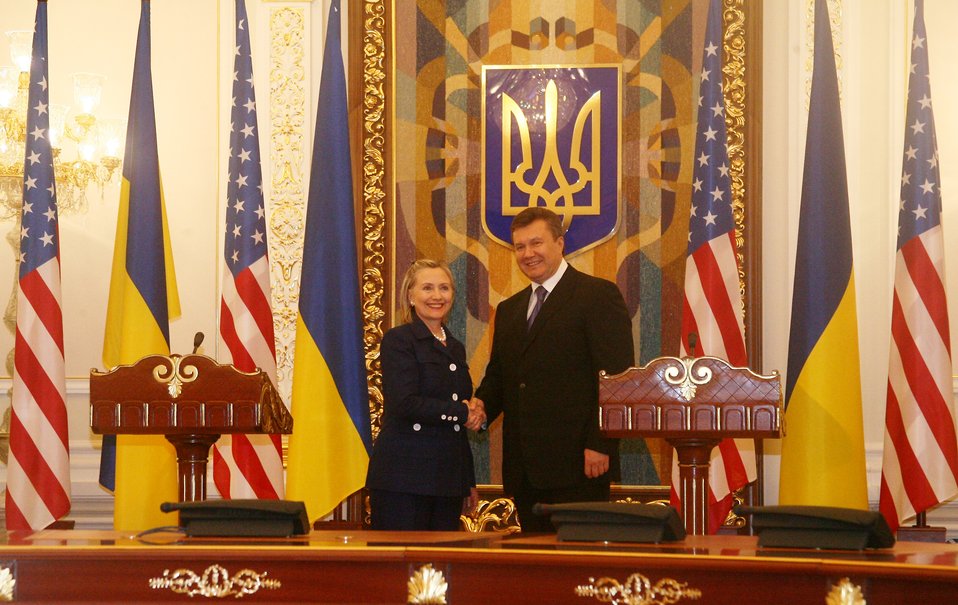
Secretary Clinton Meets With Ukrainian President

U.S. Secretary of State Hillary Rodham Clinton shakes hands with Ukrainian President Viktor Yanukovych after their joint press conference in Kyiv, Ukraine, on July 2, 2010.